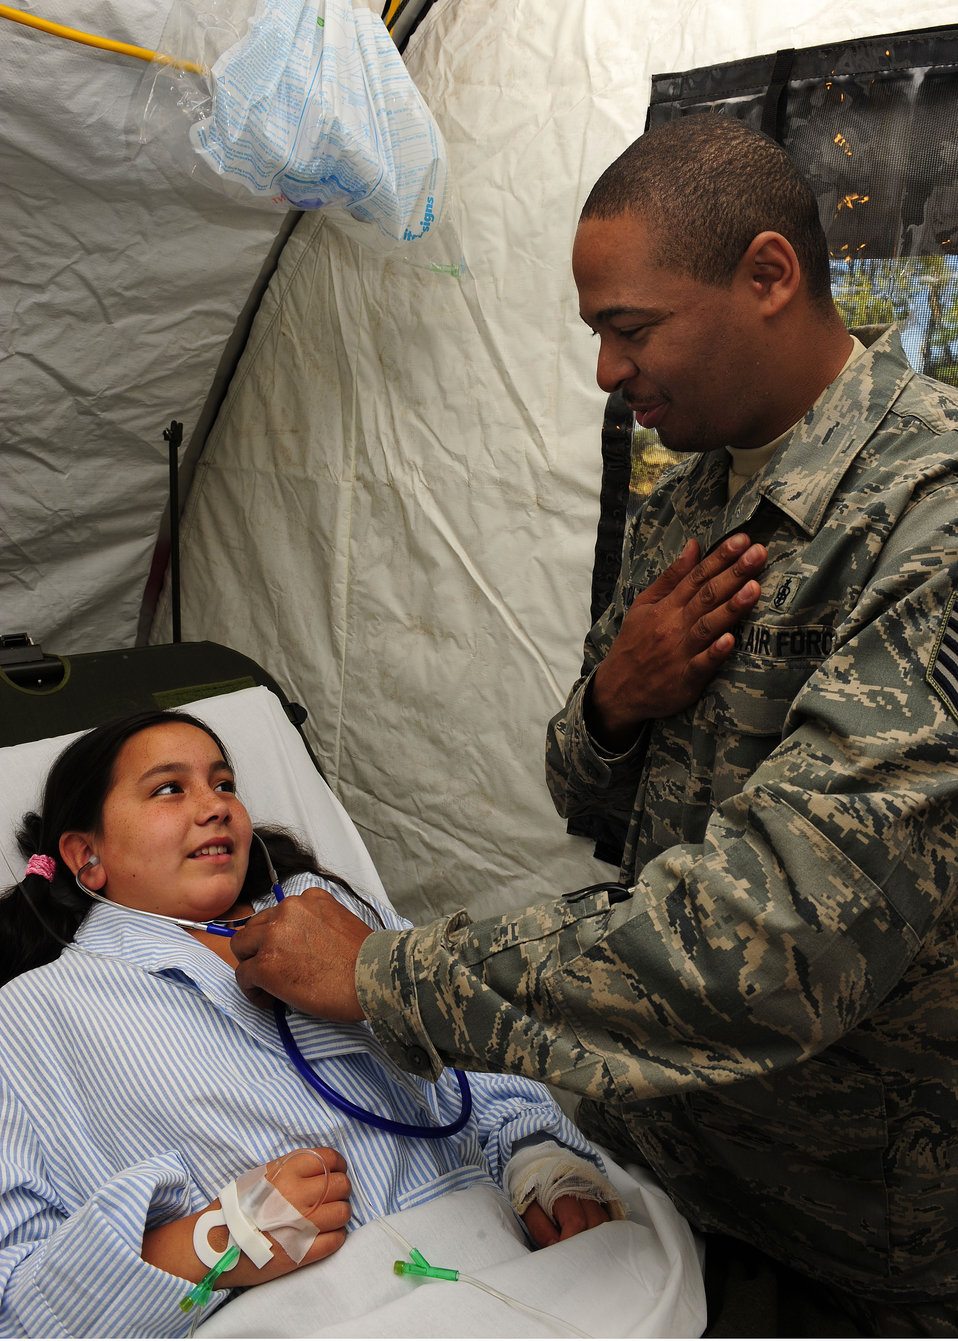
Airman cares for Chilean child

Tech. Sgt. Donelle Clark explains how a stethoscope works to a Chilean child at the expeditionary hospital March 19, 2010, in Angol, Chile. About 60 medical Airmen are working alongside local Chilean medics to provide support to meet the daily medical needs of the local community in the mobile facility. The EMEDS team is equipped and staffed to provide surgical, primary care, pediatric, radiological, gynecological, laboratory and pharmaceutical services. Sergeant Clark is an aerospace medical technician assigned to the 81st Medical Surgical Squadron at Keesler Air Force Base, Miss.